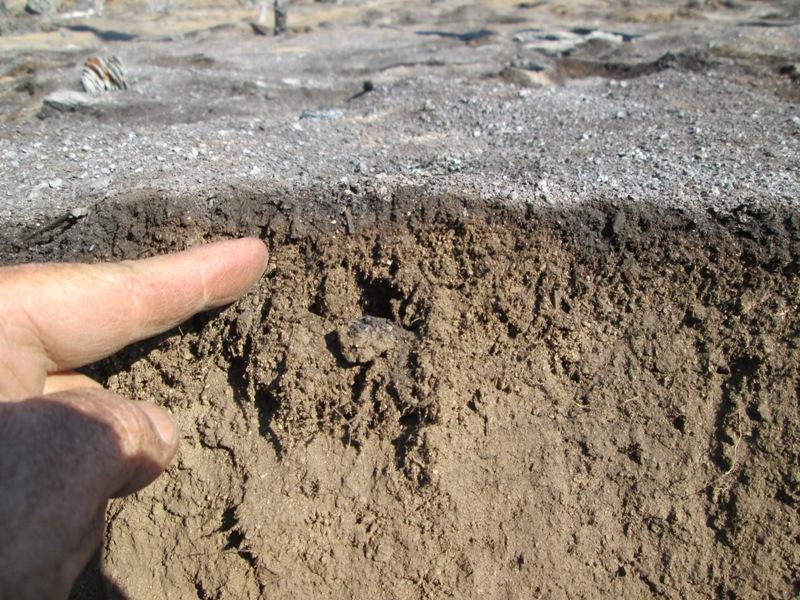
This is an example of soil burn depth after the Rim Fire. BAER is a rapid assessment of burned watersheds by a BAER team to identify imminent post-wildfire threats to human life and safety property and critical natural or cultural resources on National Forest System lands and take immediate actions to implement emergency stabilization measures before the first major storms. Fires result in loss of vegetation exposure of soil to erosion and increased water runoff that may lead to flooding increased sediment debris flows and damage to critical natural and cultural resources. BAER team members implement seeding and mulching installation to prevent erosion, erect temporary water run-off control structures that will protect recovering areas, and installation of warning signs, replace safety related facilities, remove safety hazards, prevent permanent loss of habitat for threatened and endangered species, and prevent the spread of noxious weeds and protect critical cultural resources. The Rim Fire in the Stanislaus National Forest near in California began on Aug. 17, 2013 and is under investigation. The fire has consumed approximately 256,169 acres and is 84% contained.